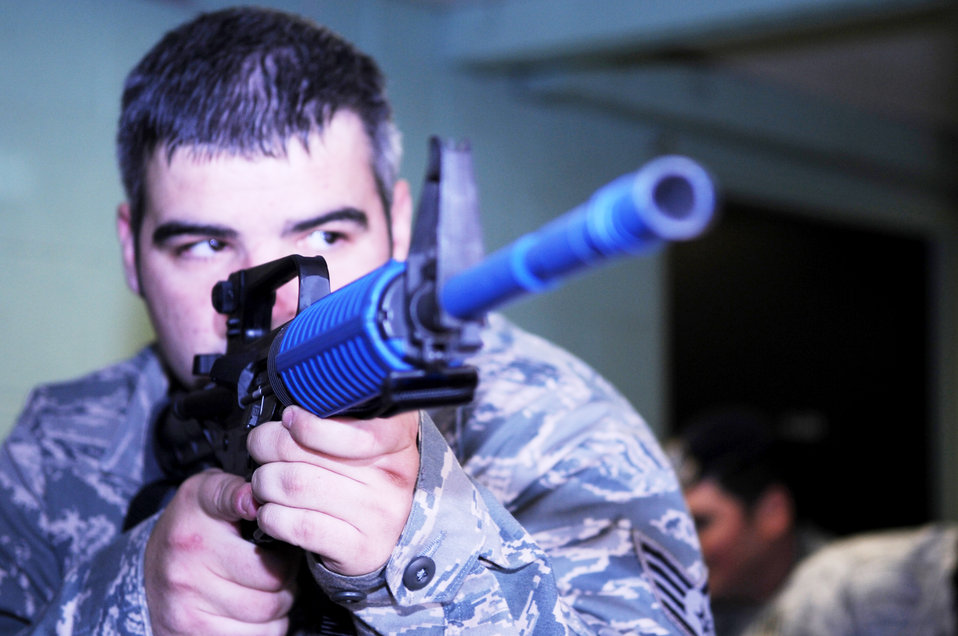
Holloman Airmen train to fight back

Staff Sgt. Matthew Bowker practices clearing a building during training Dec. 17, 2009, at Holloman Air Force Base, N.M. Sergeant Bowker is assigned to the 49th Security Forces Squadron.